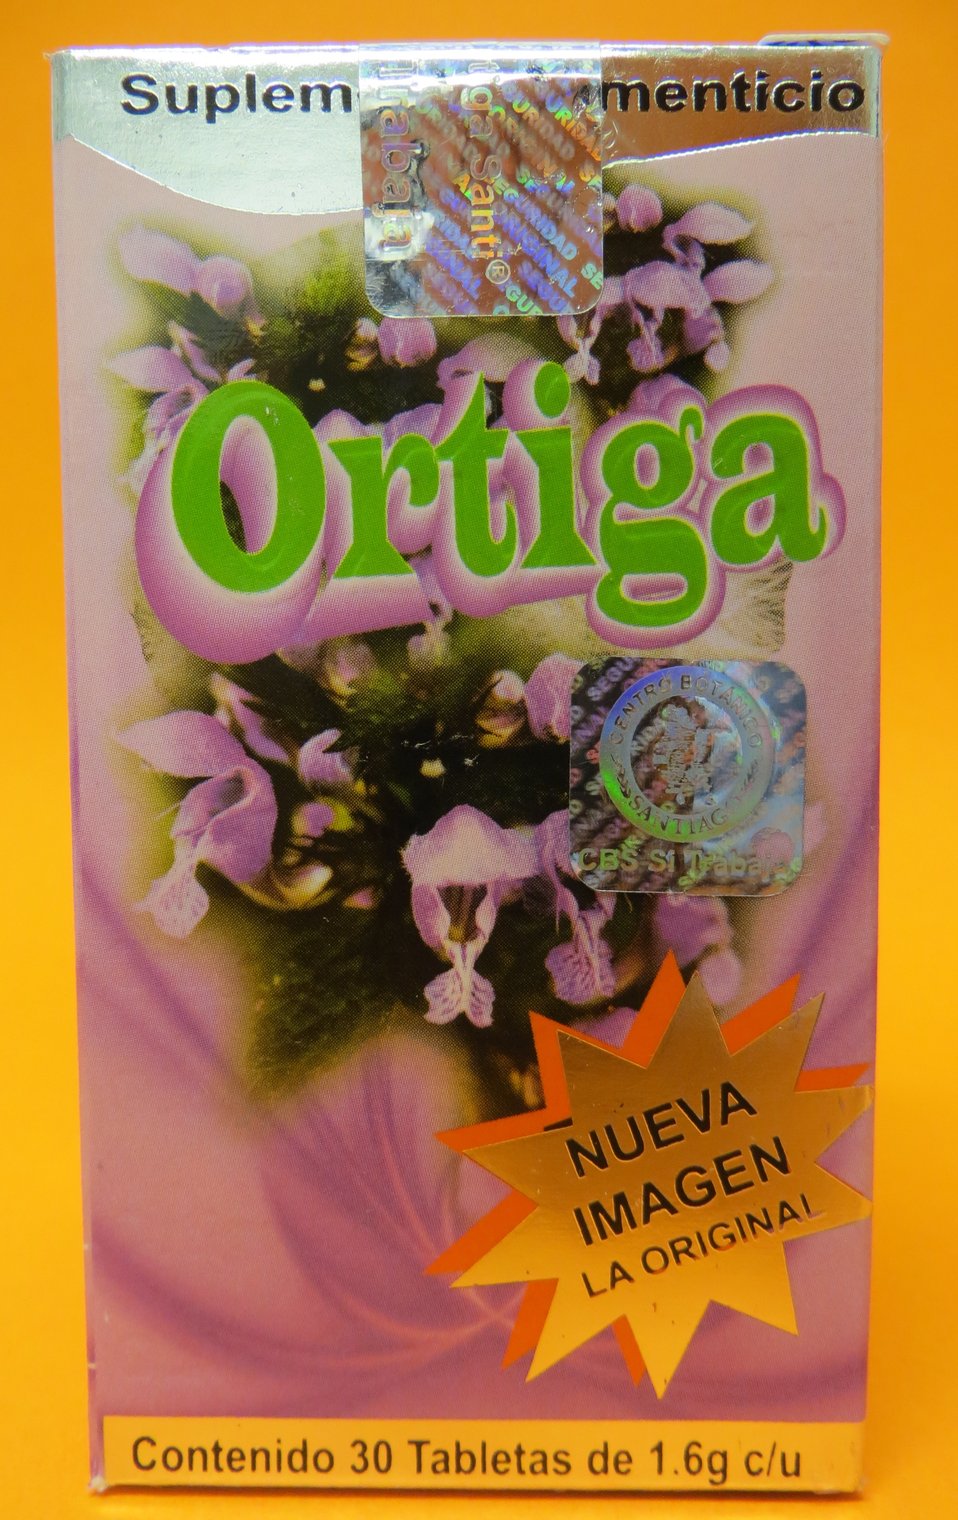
Ortiga

August 22, 2013 - The FDA is advising consumers not to purchase or use 'Ortiga,' a product promoted and sold for a variety of health conditions. The product was found to contain undeclared diclofenac. For more information, go to www.fda.gov/drugs/resourcesforyou/consumers/buyingusingme...

And read this Consumer Update: Beware of Fraudulent ‘Dietary Supplements’